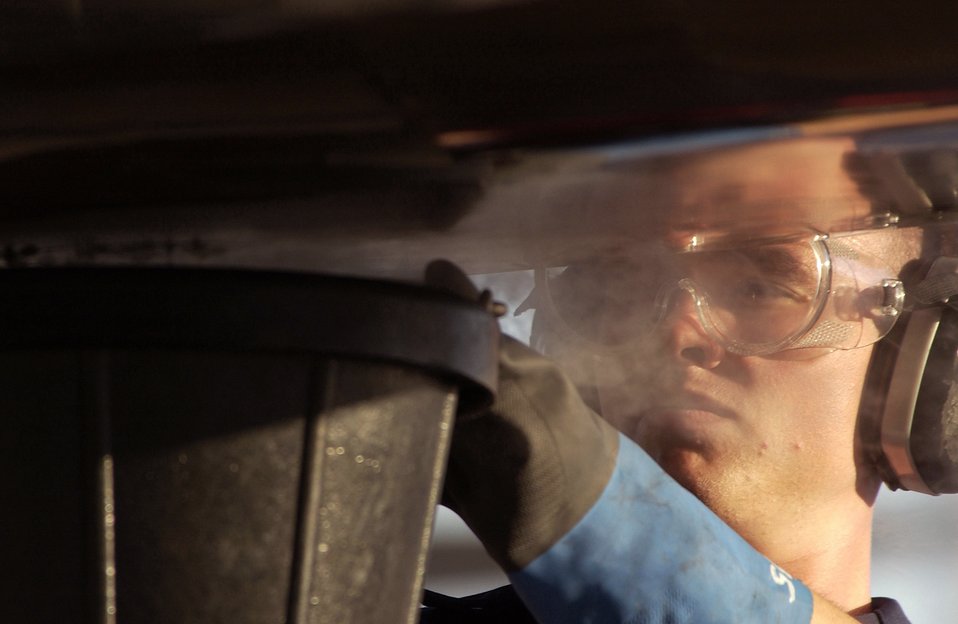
William Tell 2004

TYNDALL AIR FORCE BASE, Fla. - Airman 1st Class Aaron Hastings catches jet fuel from an F-15 Eagle shortly after it landed here Nov. 8 during William Tell 2004. This is the 50th anniversary of the William Tell competition. Pilots, weapons loaders and maintainers from five F-15 fighter wings are competing. Airman Hastings is assigned to the 1st Fighter Wing at Langley Air Force Base, Va.